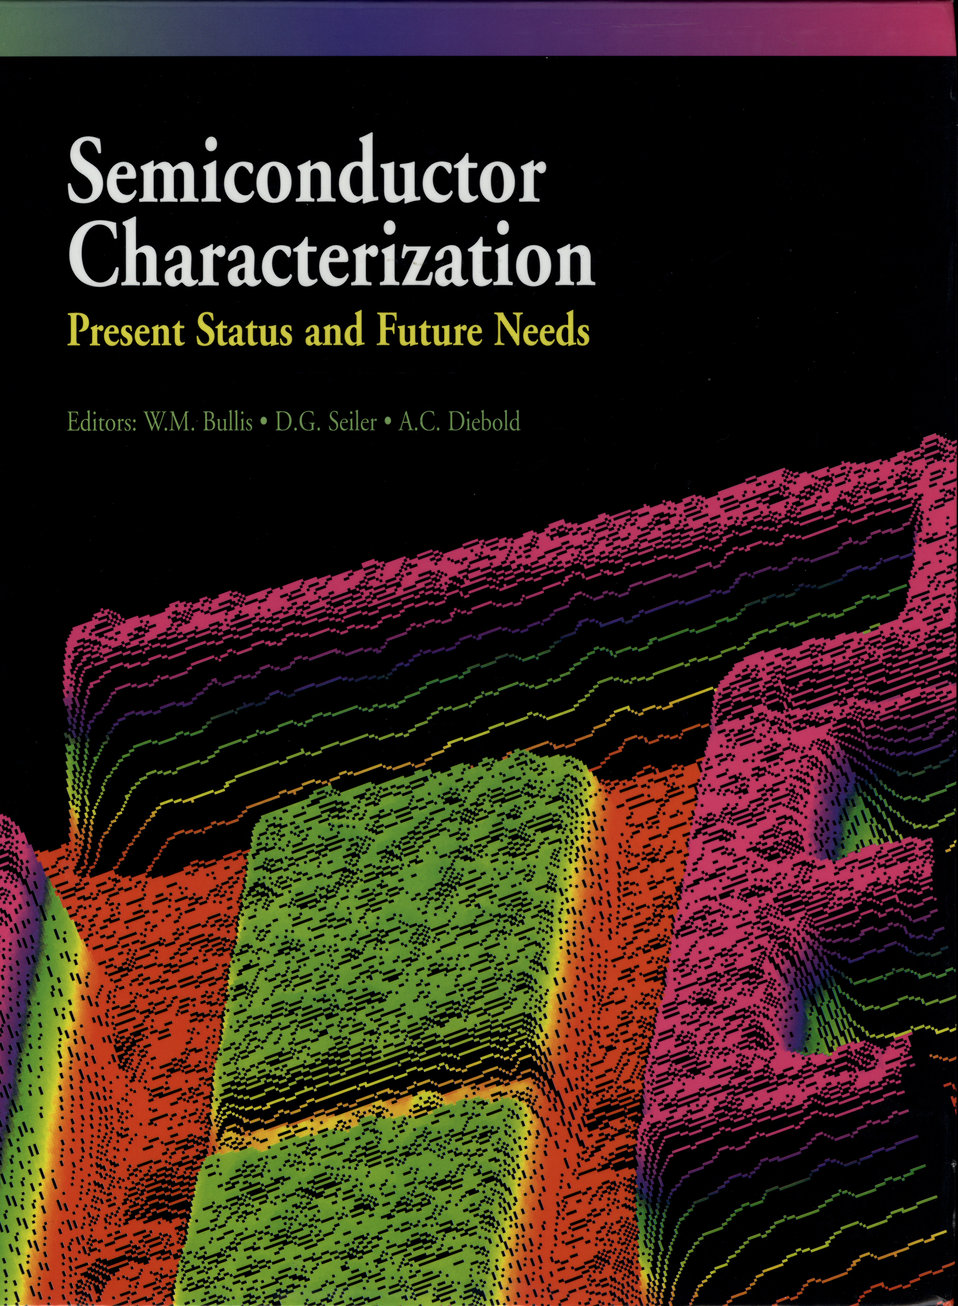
NIST, AIP Semiconductor Research compendium volume

Proceedings that have been available through paid subscription or compendium volumes, such as this one from the conference's first year, are now available online at no charge.